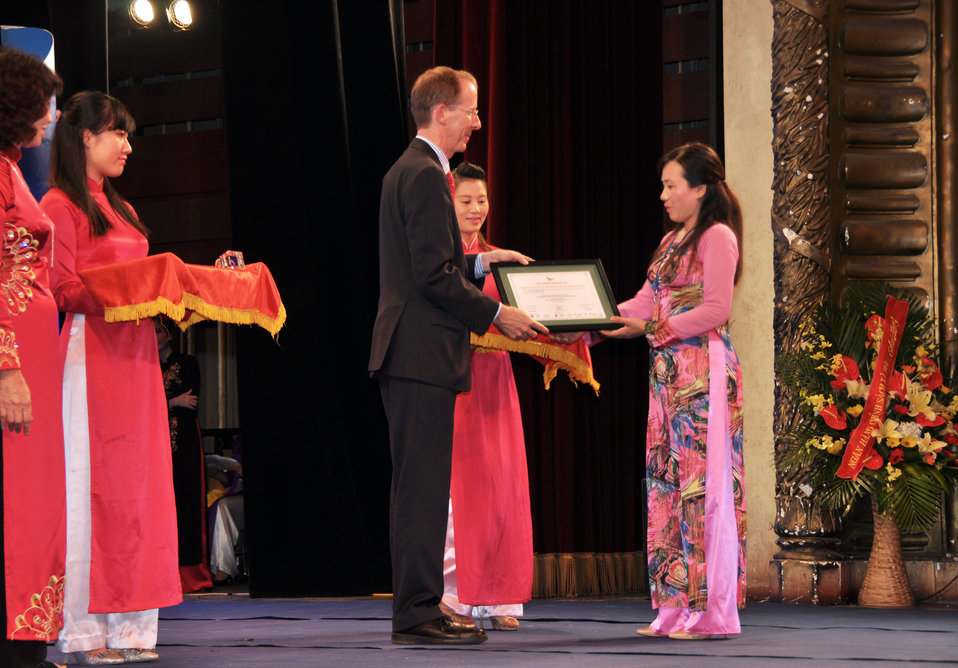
Vietnam Women Innovation Day 2013

USAID Mission Director Joakim Parker awards prizes to winning innovative proposals.

Hanoi, October 2, 2013.